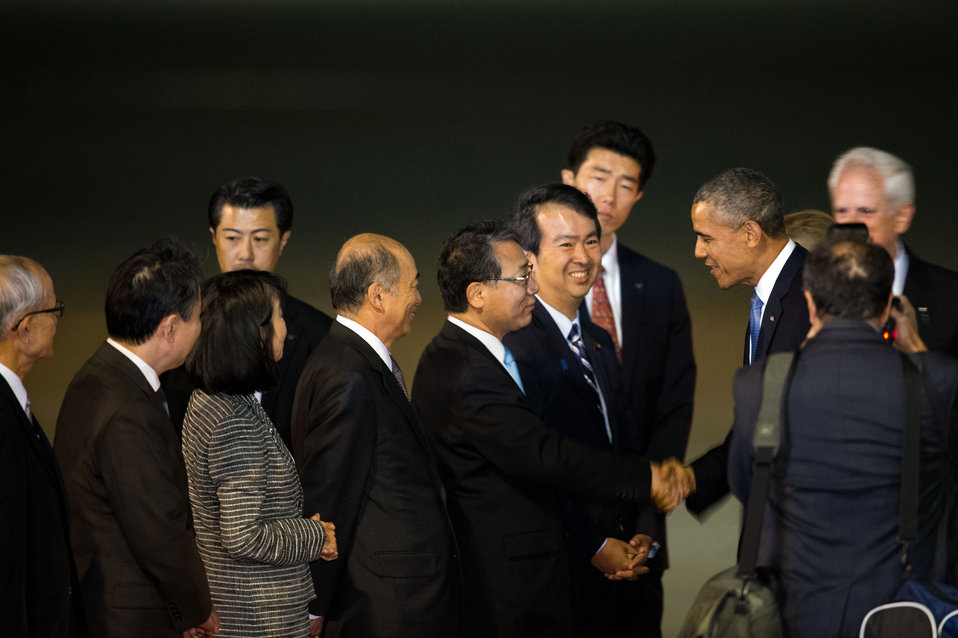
President Obama is Greeted by Japanese Officials Upon Arrival in Tokyo

U.S. President Barack Obama arrives at Tokyo International Airport and is welcomed by Japanese Ambassador to the United States Kenichiro Sasae and other Japanese officials on April 23, 2014.